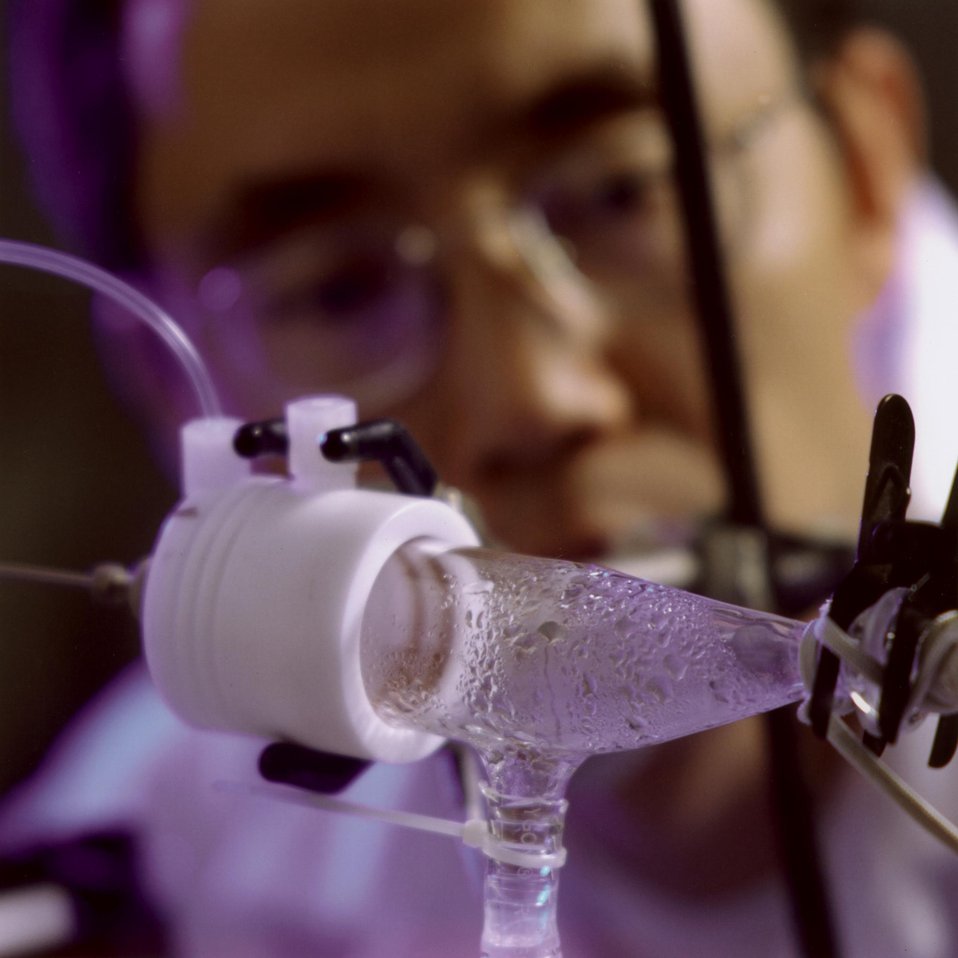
SCIENTIST OBSERVES DROPLETS CREATED WHEN A SAMPLE IS INJECTED INTO THE NEBULIZER FOLLOWING THE CHROMATOGRAPHY PROCESS.
AMES SCIENTISTS DEVELOPED AN INNOVATIVE TECHNIQUE THAT COMBINES INDUCTIVELY COUPLED PLASMA-MASS SPECTROMETRY WITH CHROMATOGRAPHY TO IDENTIFY ULTRATRACE METALS IN BIOLOGICAL SYSTEMS AT PARTS PER TRILLION LEVELS. ALLOWING MEASUREMENTS AT PARTS PER TRILLION LEVELS, THE ICP-MS TECHNIQUE RELIES ON A SPECIAL TYPE OF CHROMATOGRAPHIC SEPARATION CALLED SIZE EXCLUSION CHROMATOGRAPHY IN CONNECTION WITH A STATE OF THE ART MAGNETIC SECTOR MASS SPECTROMETER AND AN INDUCTIVELY COUPLED PLASMA, A VERY HOT ARGON GAS.